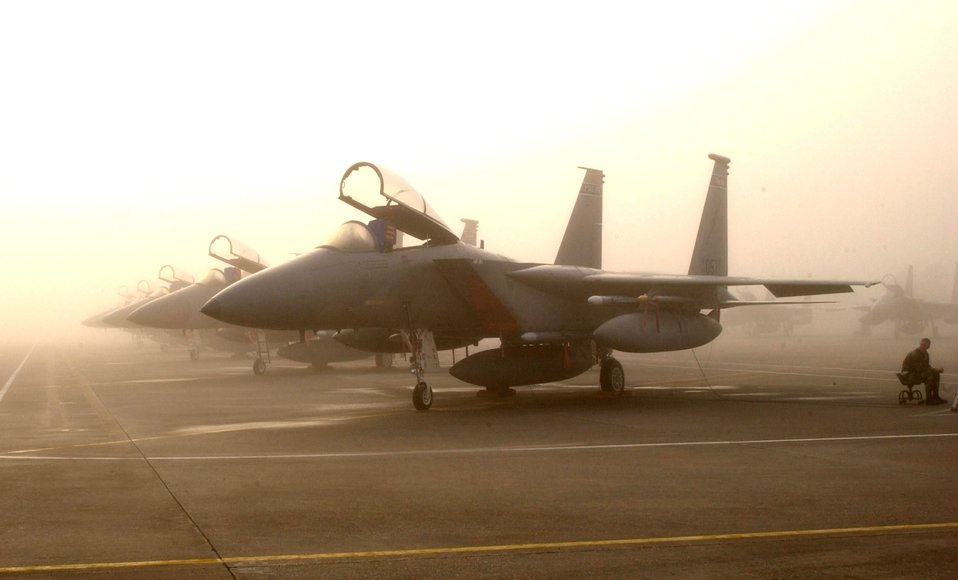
Flight preparation

JACKSONVILLE AIR NATIONAL GUARD BASE, Fla. (AFPN) -- Five F-15 Eagles sit on the flightline here before a morning launch Jan. 22. The Eagles are with the 125th Fighter Wing. The wing is participating in an operational readiness exercise to help ensure the unit is capable of deploying personnel and equipment safely and efficiently.